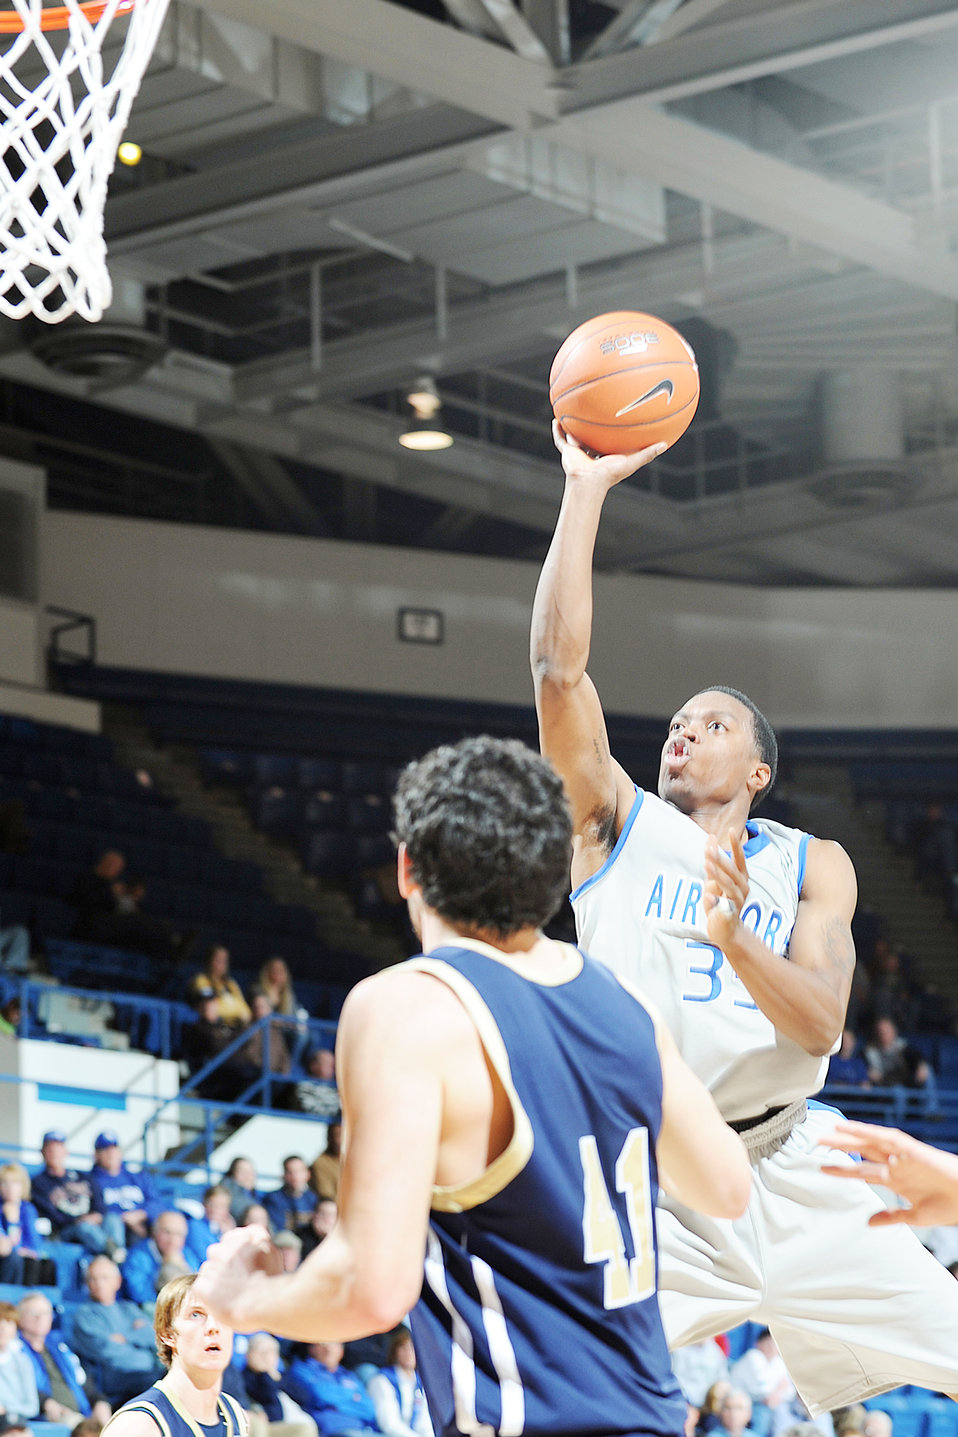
Falcons Defeat UC Davis Aggies

Junior guard Evan Washington floats in for 2 of his 10 points as the Air Force Falcons rally to defeat UC Davis 69-57 Dec. 22, 2009, at the U.S. Air Force Academy, Colo.